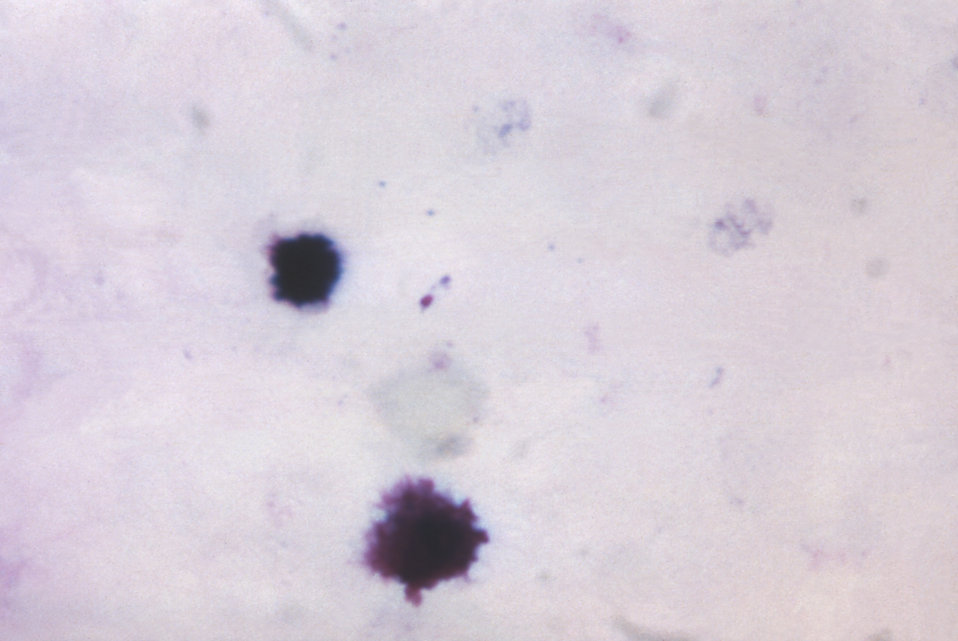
This thick film specimen reveals a young ameboid Plasmodium malariae trophozoite displaying non-distinct pigment.